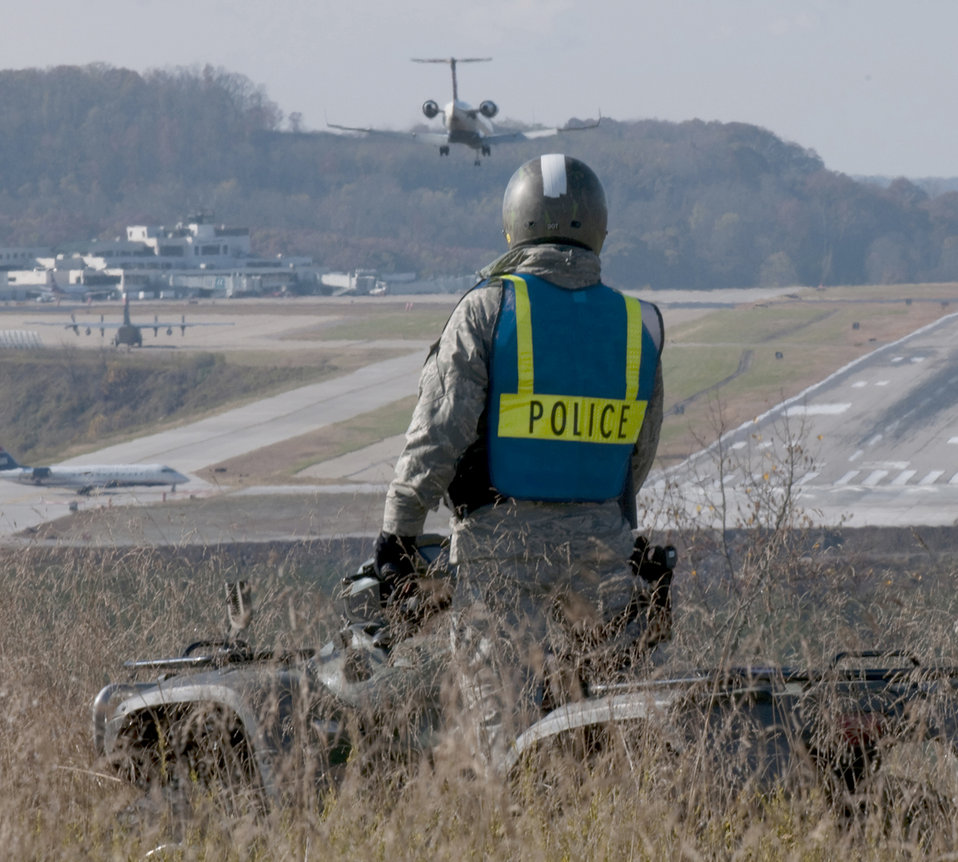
Making a perimeter check

Senior Airman Jared B. Jackson patrols the area Nov. 10, 2010, surrounding Yeager Airport in Charleston, W. V. He is assigned to the West Virginia Air National Guard's 130th Airlift Wing Security Forces at the airport.